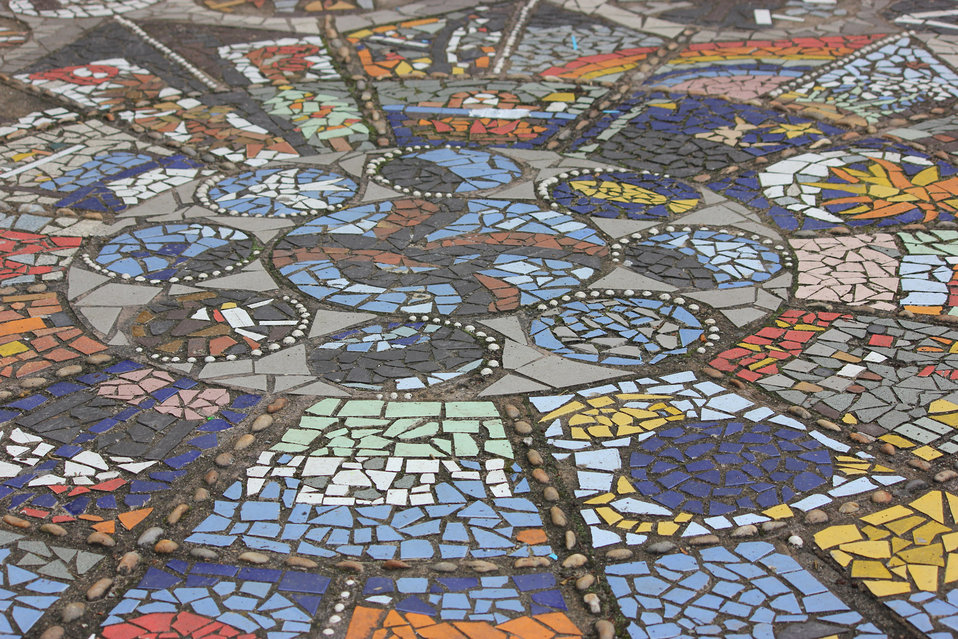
Colorful mosaic.